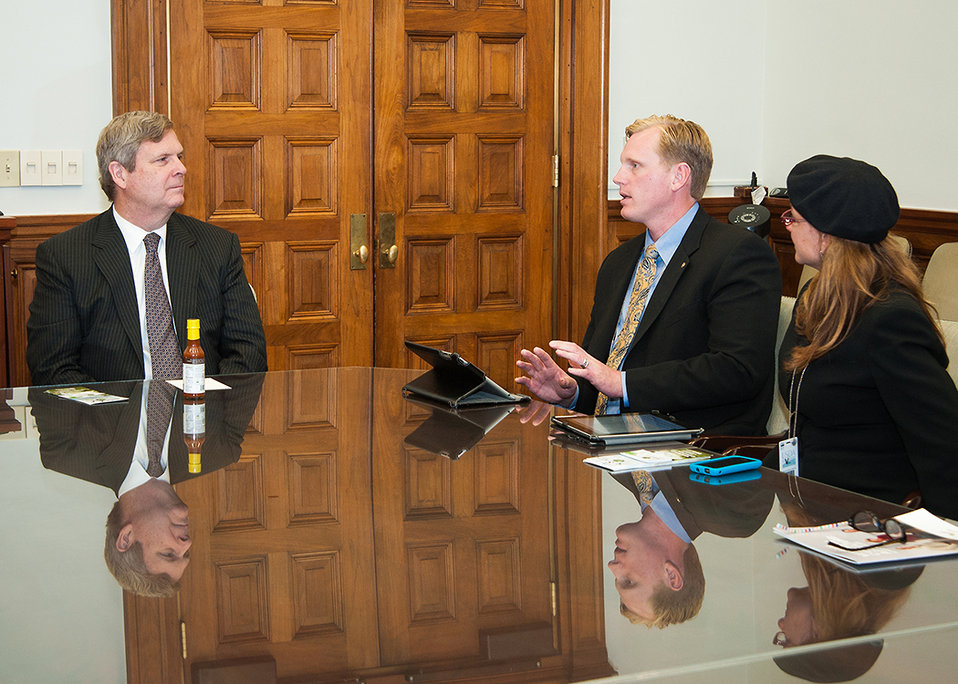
(L to R) Agriculture Secretary Tom Vilsack, Archi’s Acres and Veteran’s Sustainable Agriculture Training (VSAT) users Colin and Karen Archipley discuss the experience and knowledge they have with their farm and the Veteran’s Sustainable Agriculture Training (VSAT) at the U.S. Department of Agriculture (USDA) in Washington, D.C. on Tuesday, Apr. 3, 2013. Archie’s Acres in association with a local university offers the Veteran’s Sustainable Agriculture Training (VSAT) program to active-duty military, veterans and anyone interested in sustainable agriculture as a career. The Archipleys run a state-of-the-art, organic, hydroponic greenhouse operation in Escondido, CA. The farm produces basil, kale, avocados and a variety of other crops for the local market.